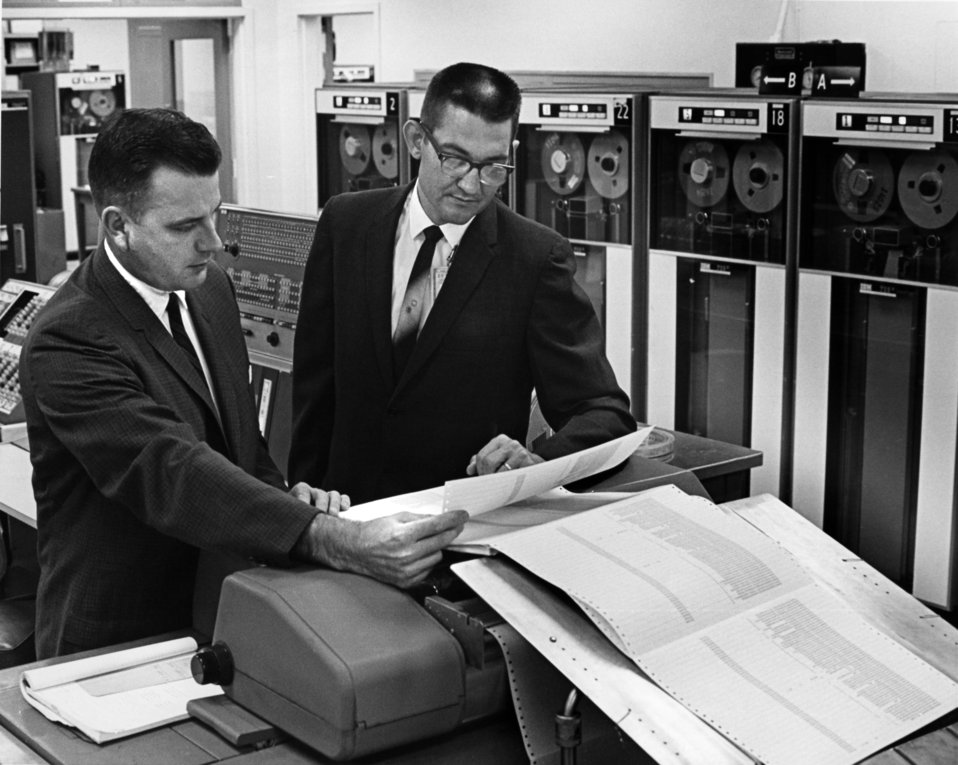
Peers Training Program Oak Ridge

65-0353-33 DOE photo Ed Westcott 6-1-1965 Oak Ridge Tennessee